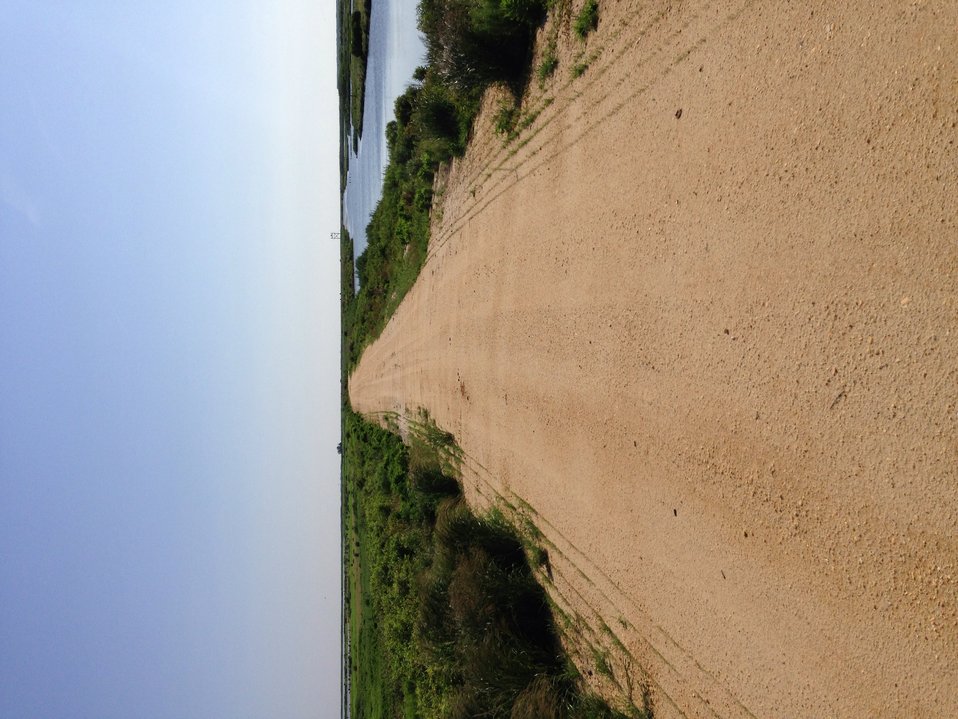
Forsythe wildlife drive after hurricane repairs

South entrance to cross dike looking north.